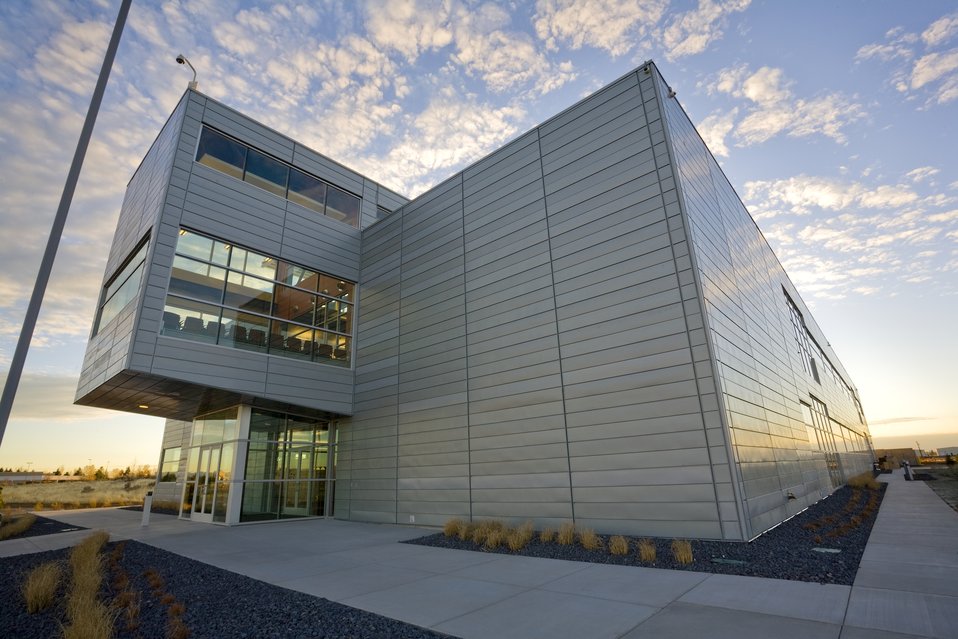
AT IDAHO NATIONAL LABORATORY, THE CENTER FOR ADVANCED ENERGY STUDIES, IS ONE OF THE ONLY GREEN STRUCTURES IN EASTERN IDAHO.

The center is registered for Leadership in Energy and Environmental Design (LEED) certification and plans to certify at the Gold level, the second highest rating.